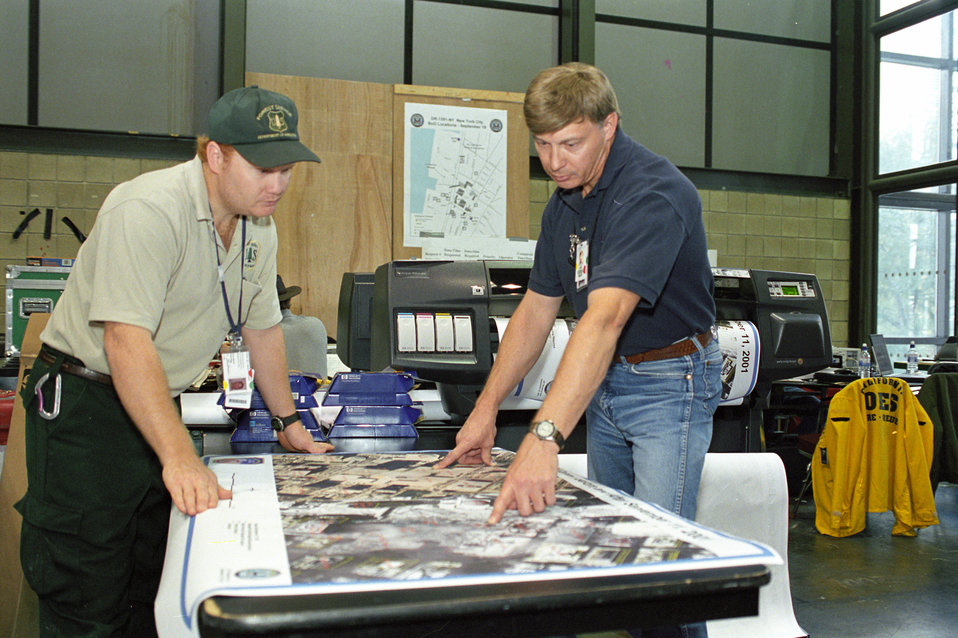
September 11, 2001 terrorists attacked the World Trade Center in New York City, NY, the Pentagon in Arlington, VA., and a field in rural Pennsylvania. After the attacks the U.S. Department of Agriculture (USDA) Forest Service (FS) Incident Management Teams restored communications and provided initial incident command of the World Trade Center and Pentagon Crash sites on September 26, 2001.